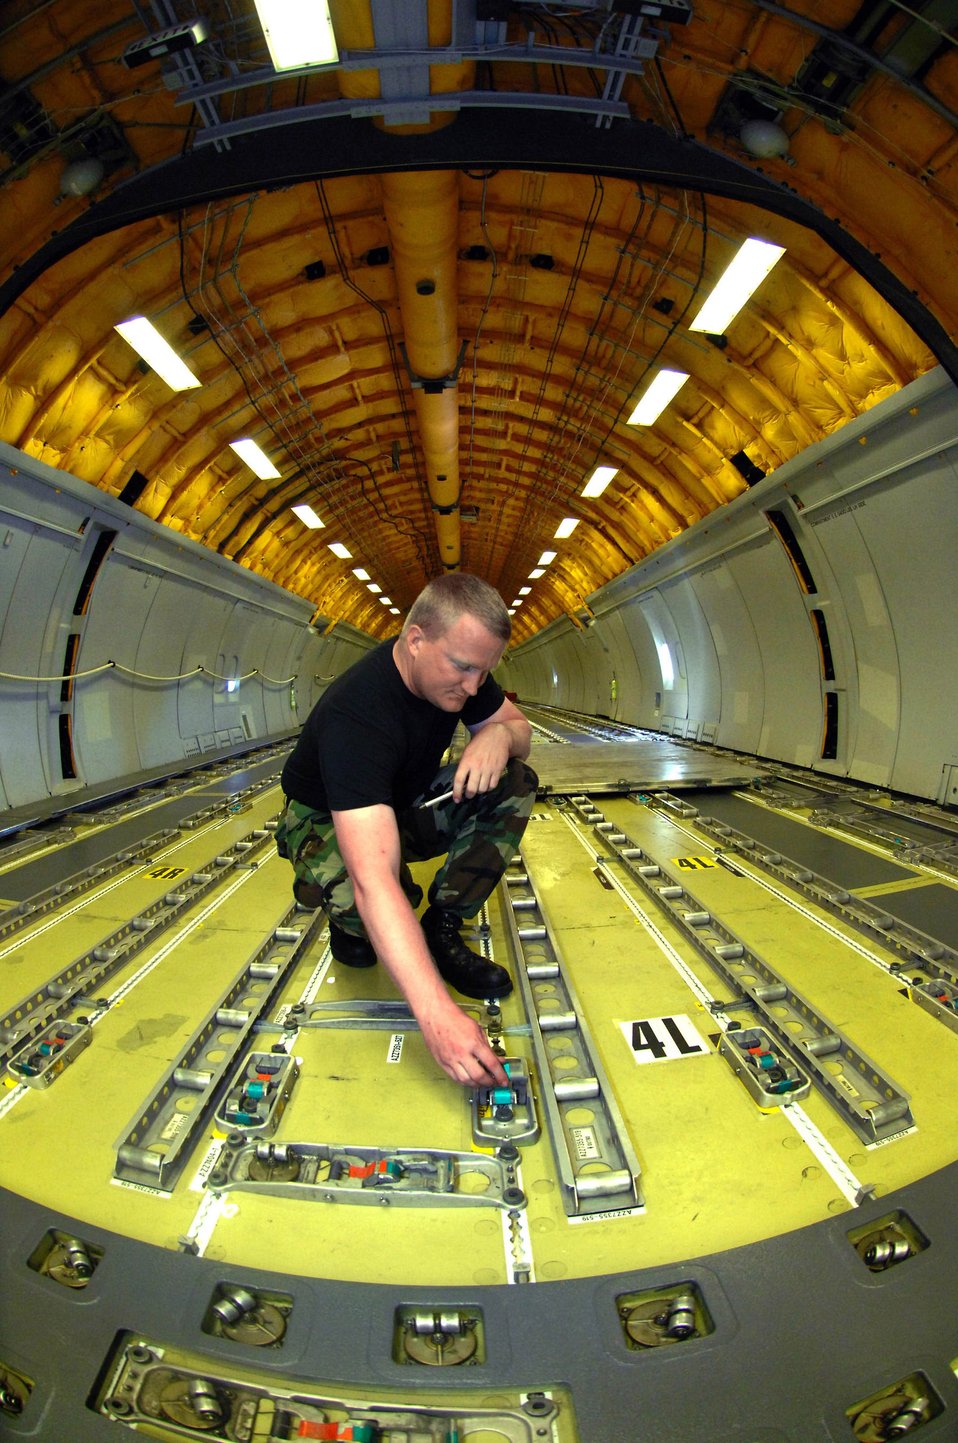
It's a long way to the front

Staff Sgt. Darren Dobelman adjusts the tracks in the cargo bay of a KC-10 Extender aircraft June 28 at Travis Air Force Base, Calif. Sergeant Dobelman is a maintainer with the 660th Aircraft Maintenance Squadron.